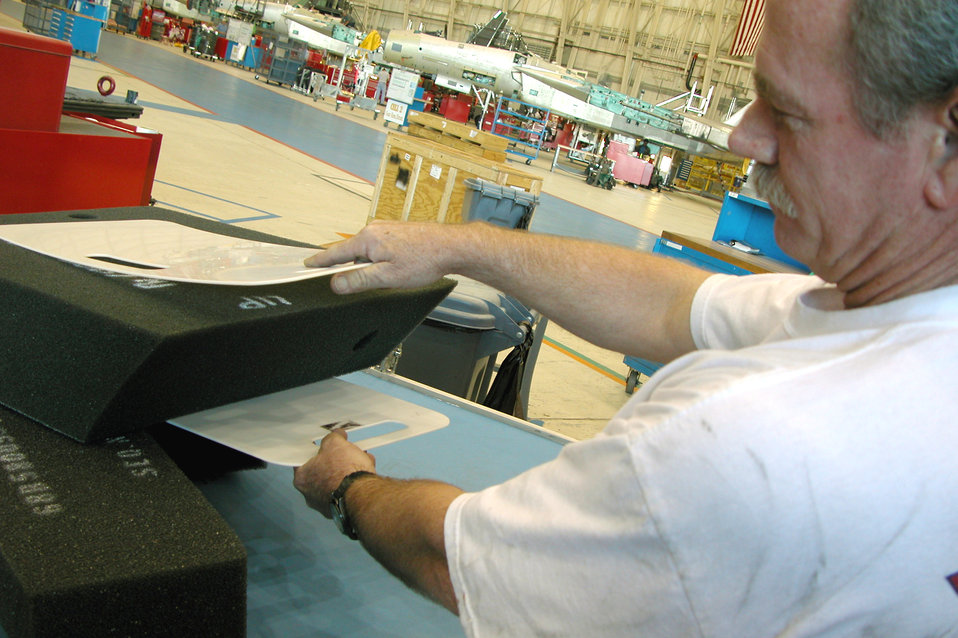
Stuffing F-15s

ROBINS AIR FORCE BASE, Ga. -- Steve Givens, an aircraft systems worker, demonstrates the use of Delrin Separators which allow foam sheets to be inserted into F-15 Eagle fuel tanks easier than workers placing them in manually. The separator is one of three new intervention tools that has produced reductions in ergonomic risks.